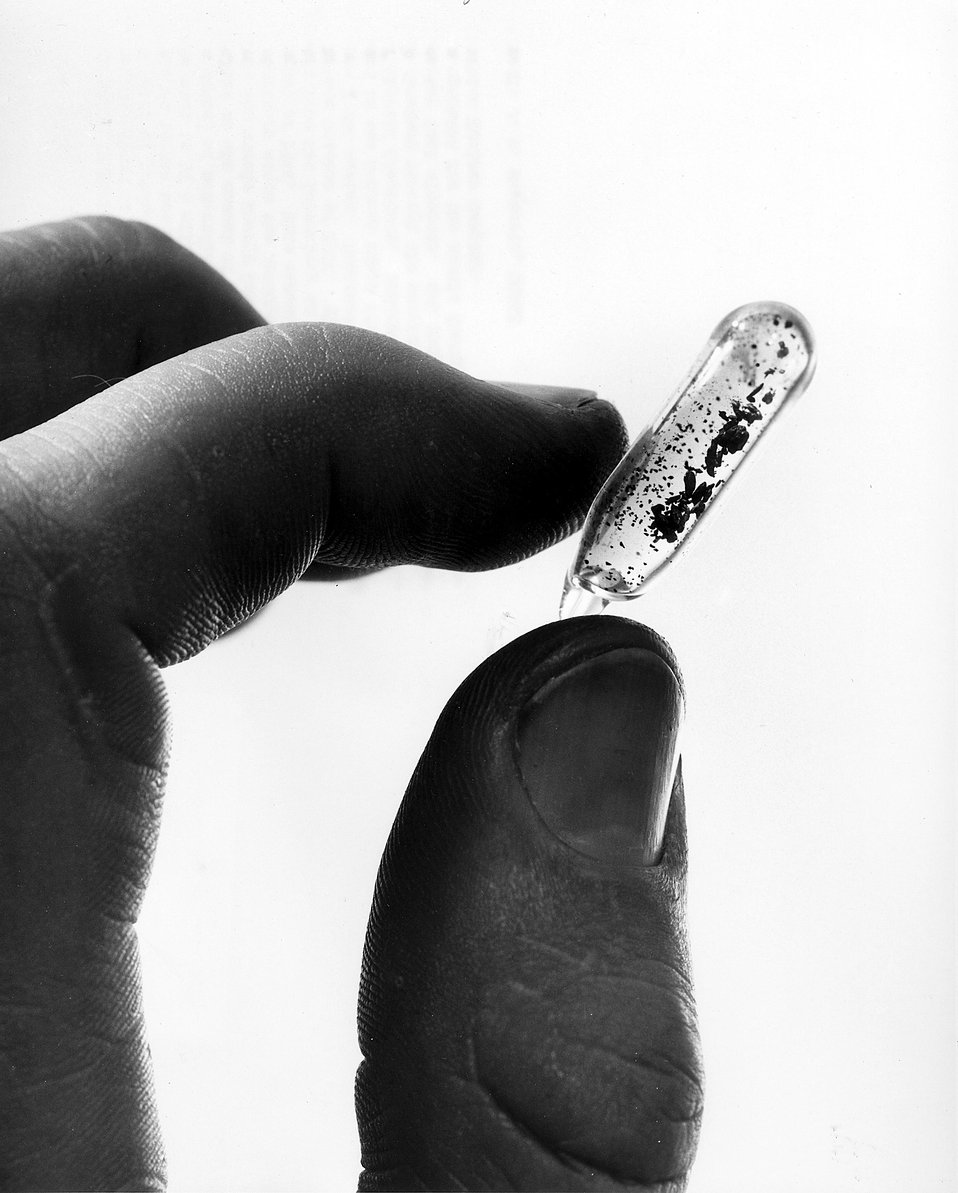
The small amount of material shown in the vial represents more than 14 years of production in the atomic energy field related to the betterment of mankind. Circa 1961.